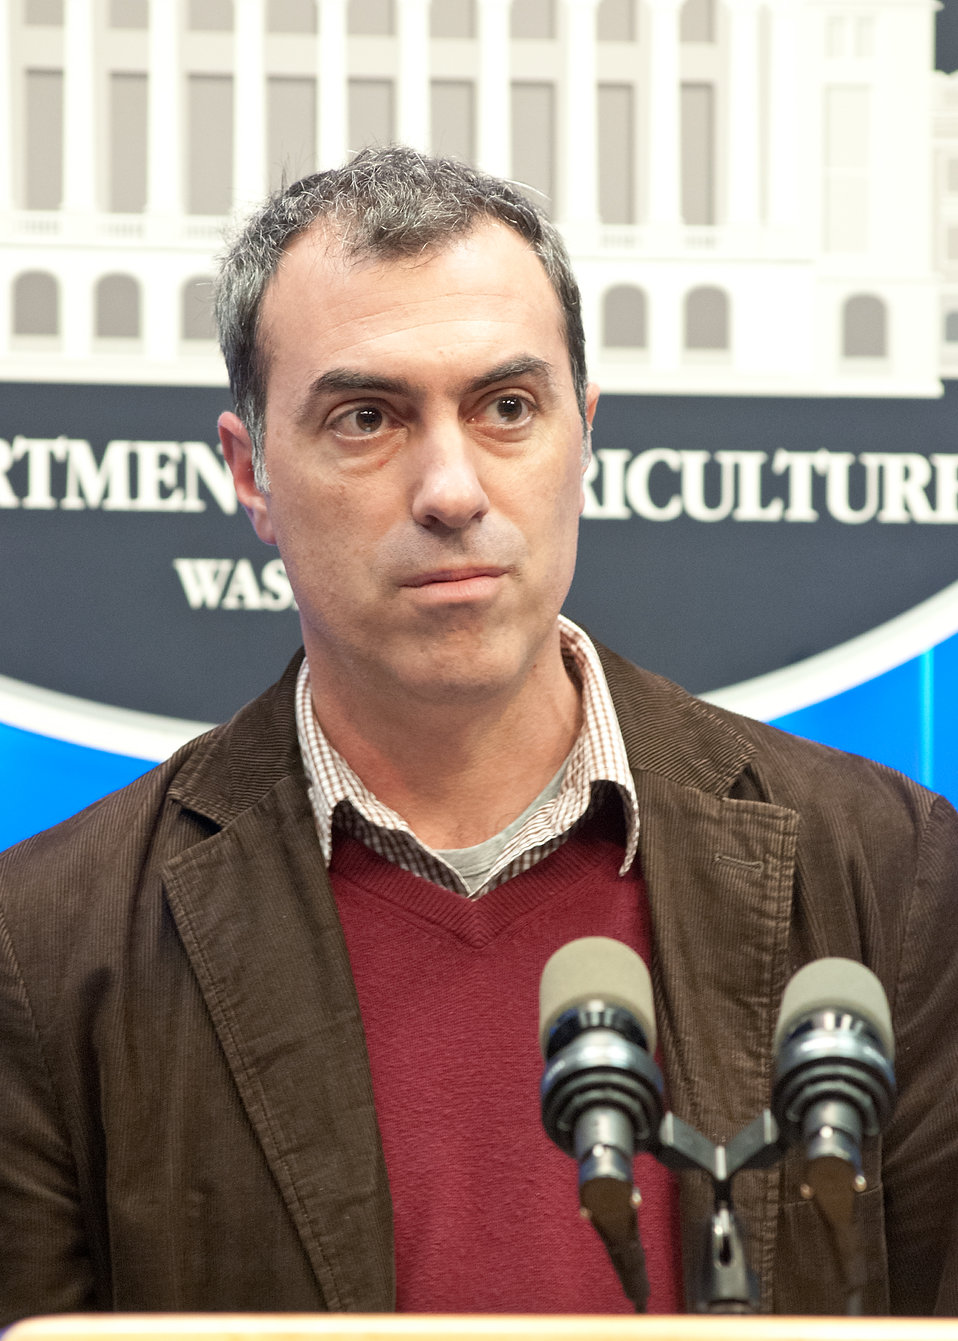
Phil Petrilli, Regional Director, Chipotle Mexican Grill, a sponsor of the On-Farm Food Safety Project discussed the Chipotle Food with Integrity Program, level of local food purchasing of his company and the need for farmers to adopt best practices in food safety. Petrilli along with Agriculture Deputy Secretary Dr. Kathleen Merrigan and leaders from agriculture and food organizations announced the release of the On-Farm Food Safety Project Tool, www.onfarmfoodsafety.org at the United States Department of Agriculture in Washington, D.C., on Thursday, December 15, 2011. The On-Farm Food Safety Project is the first of its kind and was developed by a broad coalition of farm and produce industry partners with lead funding from the USDA Risk Management Agency.